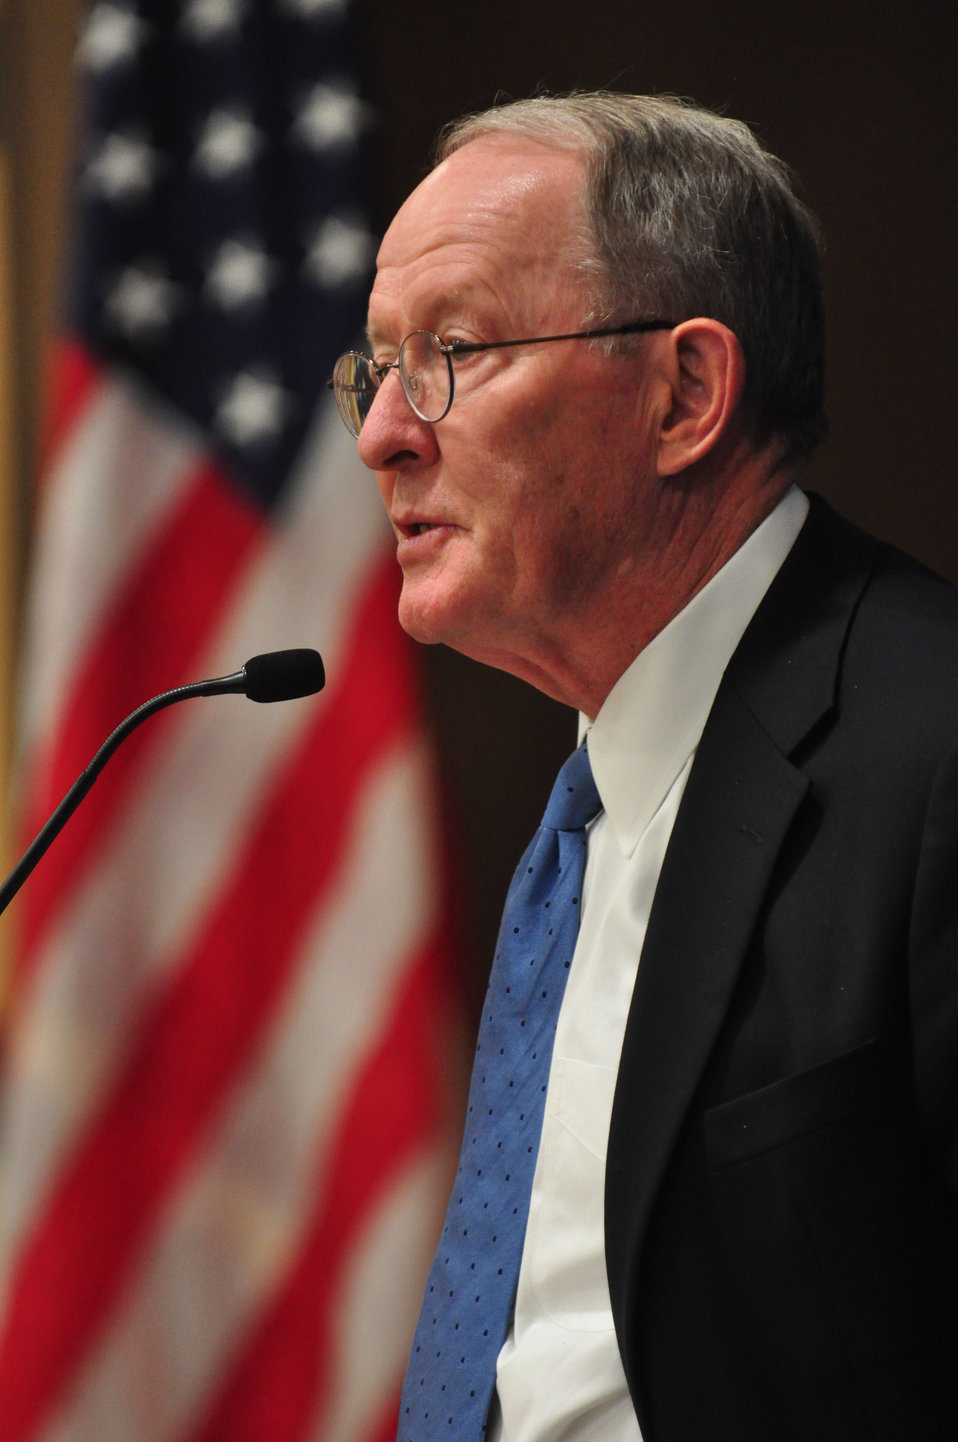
U.S. Senator Lamar Alexander Tennessee Valley Corridor Summit Oak Ridge

13-062 DOE photo Lynn Freeny 5-29-2013 Oak Ridge Tennessee